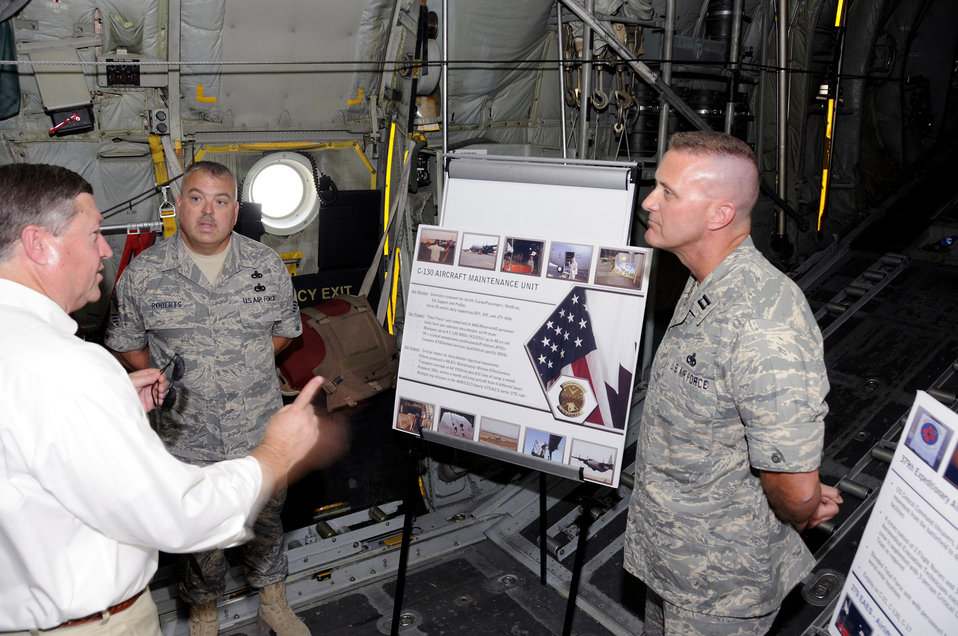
Secretary visits Airmen in Southwest Asia

Secretary of the Air Force Michael B. Donley discusses C-130 Hercules maintenance issues with Capt. Collen Shelton and Chief Master Sgt. Donald Roberts Oct. 11 at a Southwest Asia air base. Captain Shelton and Chief Roberts are assigned to the both assigned to the 379th Expeditionary Aircraft Maintenance Squadron.